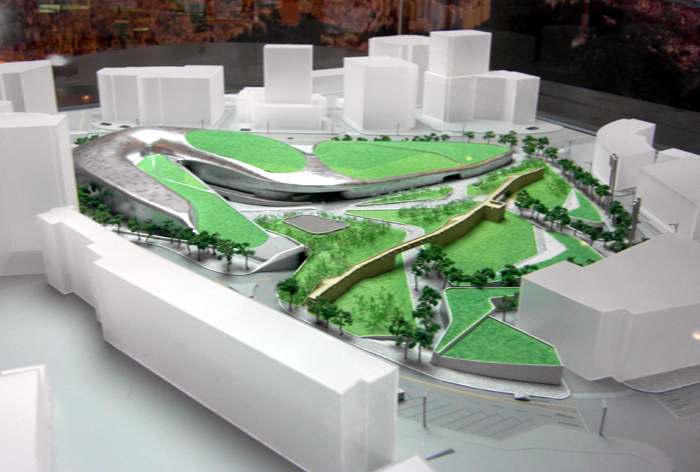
1/500 scale model of Dongdaemun Design Plaza & Park